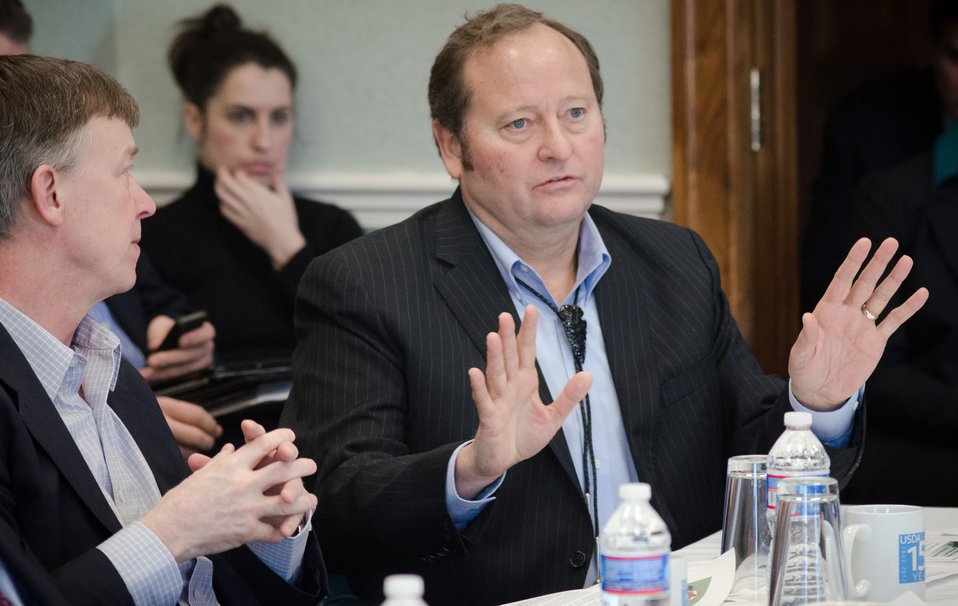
Montana - Governor Brian Schweitzer (right) presents issues that are important his state, to Agriculture Secretary Tom Vilsack, Interior Secretary Ken Salazar, Environmental Protection Agency Administrator Lisa Jackson, and Council on Environmental Quality Chair Nancy Sutley, who are in the Lincoln Room, of the United States Department of Agriculture headquarters, in Washington, D.C., on Sunday, February 26, 2012.